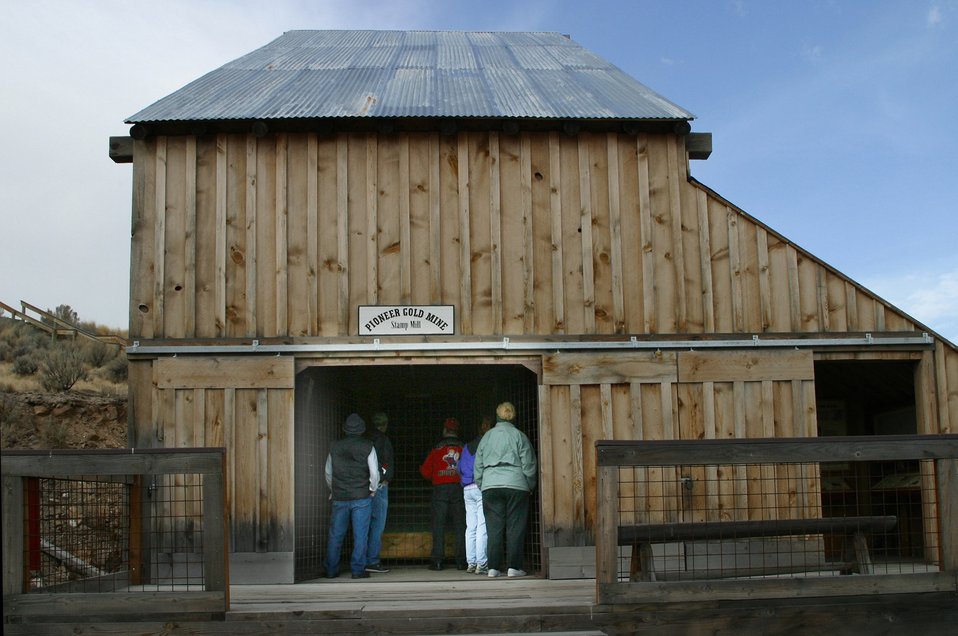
A replica of the Rabbit Mine 1926 stamp mill near Greenhorn in the Blue Mountains of eastern Oregon. It is used to interpret the importance of mining in western history, and the relationship of gold mining to the westward migration story.